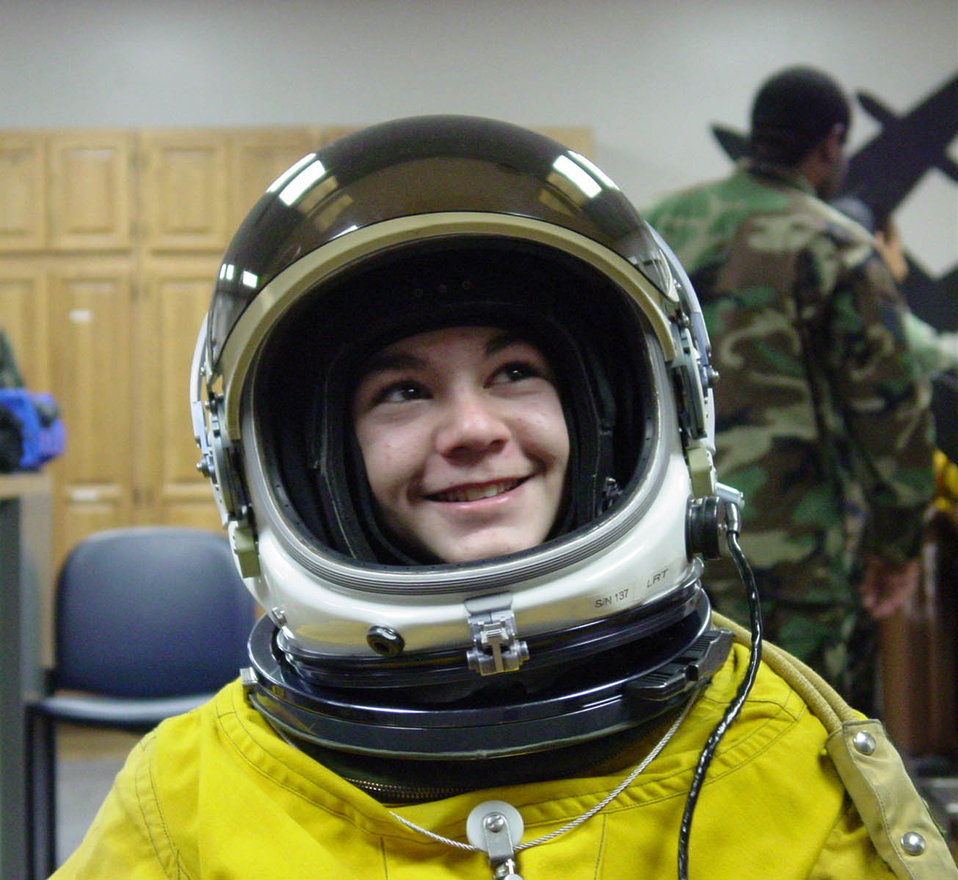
Make a wish

BEALE AIR FORCE BASE, Calif. (AFPN) -- Ryan Penne, then 13, reacts to being suited up in a pressure suit used by U-2 pilots when flying high altitude missions. Ryan and his family were given a tour of Beale last year as part of the Make-A-Wish program. It was during this tour that Ryan met Col. Darryl Burke, then vice commander of the 9th Reconnaissance Wing, who now commands the 380th Air Expeditionary Wing in Southwest Asia.